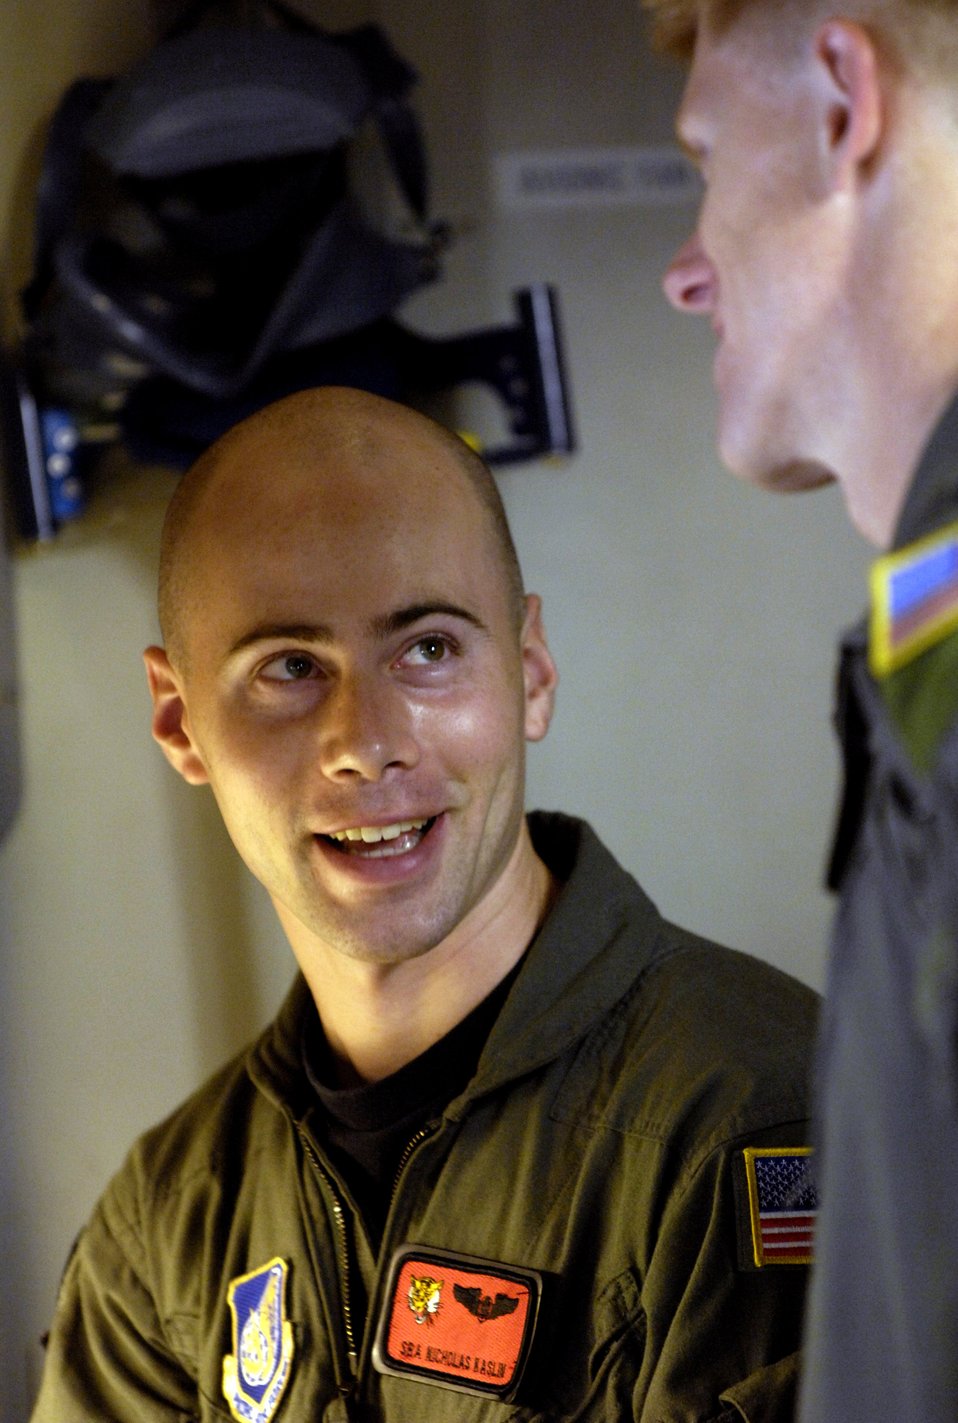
Globemaster training

Senior Airman Nick Kaslin talks with Capt. Paul Theriot Nov. 15 before taking off on a local training mission in their C-17 Globemaster III from Hickam Air Force Base, Hawaii. The Airmen are from the 535th Airlift Squadron.